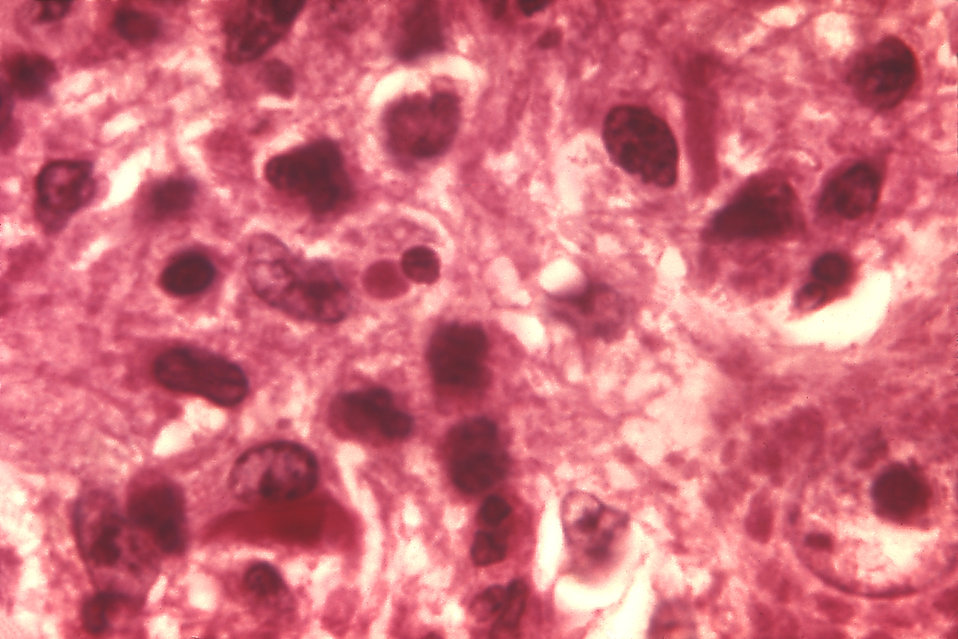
This micrograph depicts the histopathologic changes associated with rabies encephalitis prepared using an H&E stain.